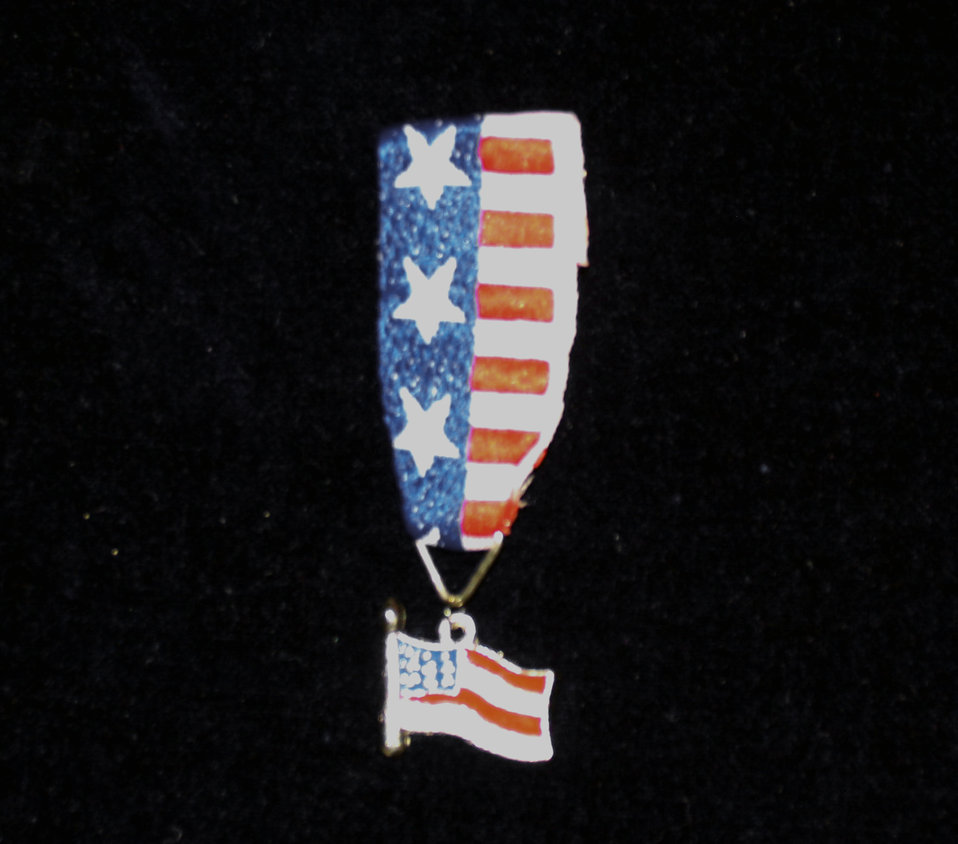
Hanscom children honores with medal

HANSCOM AIR FORCE BASE -- The Children's Home Front Hero Medal, which features a replica of the American flag, is presented to Hanscom children of deployed servicemembers.